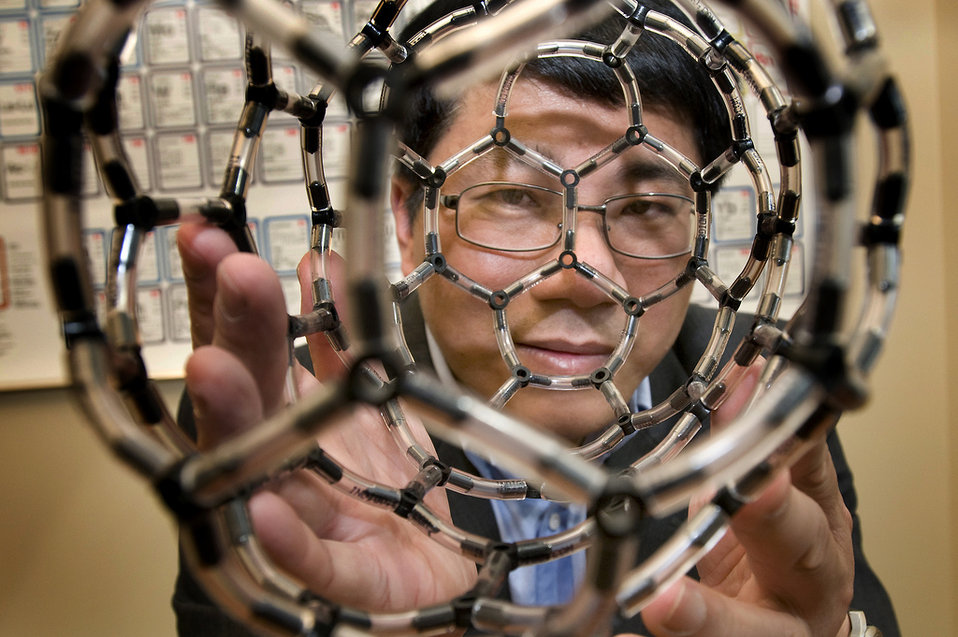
Nanotube, Buckyball model at Brookhaven's Center for Functional Nanomaterials.

The CFN at Brookhaven provides state-of-the-art capabilities for the fabrication and study of nanoscale materials, with an emphasis on atomic-level tailoring to achieve desired properties and functions. The center is a science-based user facility, simultaneously developing strong scientific programs while offering broad access to its capabilities and collaboration through an action user program. The overarching scientific theme of the CFN is the development and understanding of nanoscale materials that address the Nation's challenges in energy security, consistent with the DOE mission.